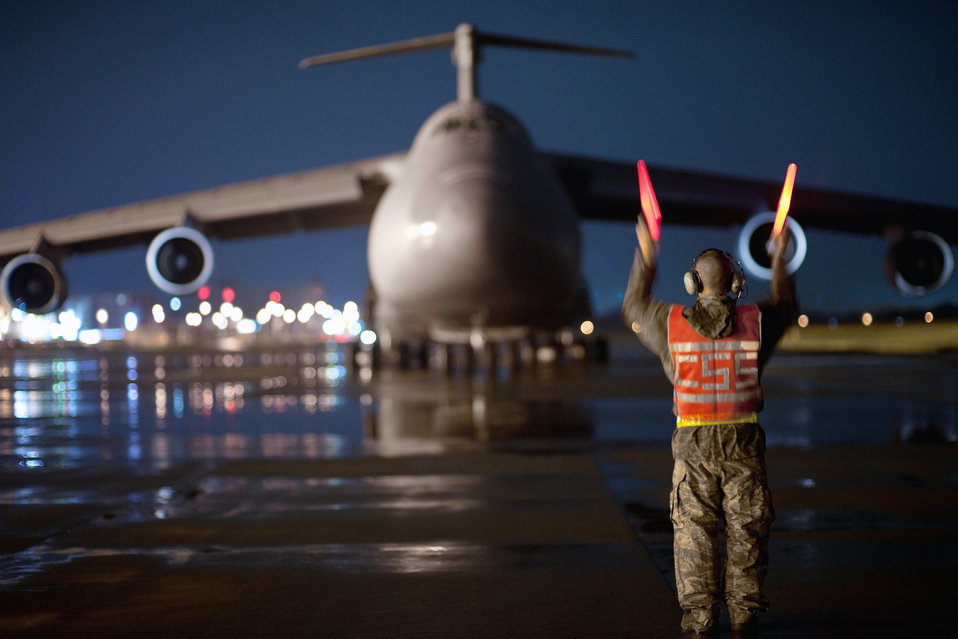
Watch my signals

Staff Sgt. Dustin McComas, 730th Air Mobility Squadron, marshals a C-5 Galaxy aircraft after it lands at Yokota Air Base, Japan, Sept. 15, 2010. Yokota Airmen work 24/7 operations to keep inbound and outbound aircraft running in the airlift hub of the western Pacific.